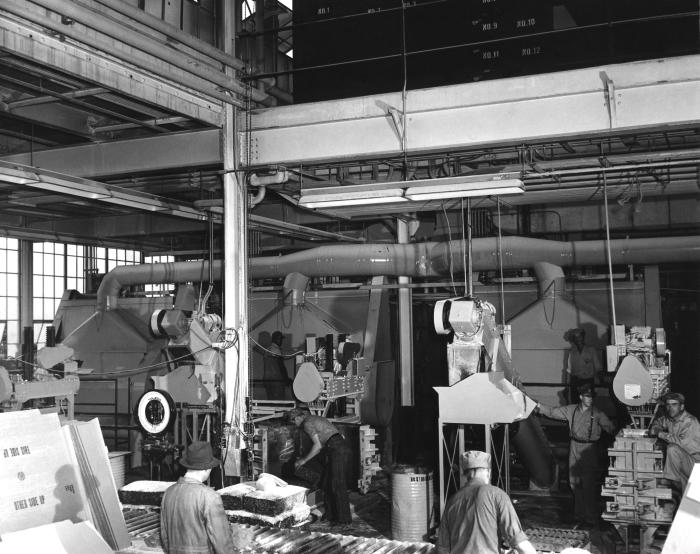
The Firestone Tire & Rubber, Co. workers depicted in this historic image, were working with industrial driers used to dry synthetic rubber. The environment appeared to be well-ventilated by large, hooded ventilation units located throughout the workplace, in order to remove irritating smoke, which was a byproduct of this manufacturing process. Even though the atmosphere was being regularly cleansed, none of the men were wearing protective masks, goggles, or gloves.The NIOSH Historic Photo Collection was the 'picture file' of the Industrial Hygiene Division of the U.S. Public Health Service (USPHS) (c. 1930-1960). It is both a unique mid-20th century image collection of people in workplace environments, and a documentary record of the science of studying workers and the workplace. The collection consisted of photographs, and some original drawings.